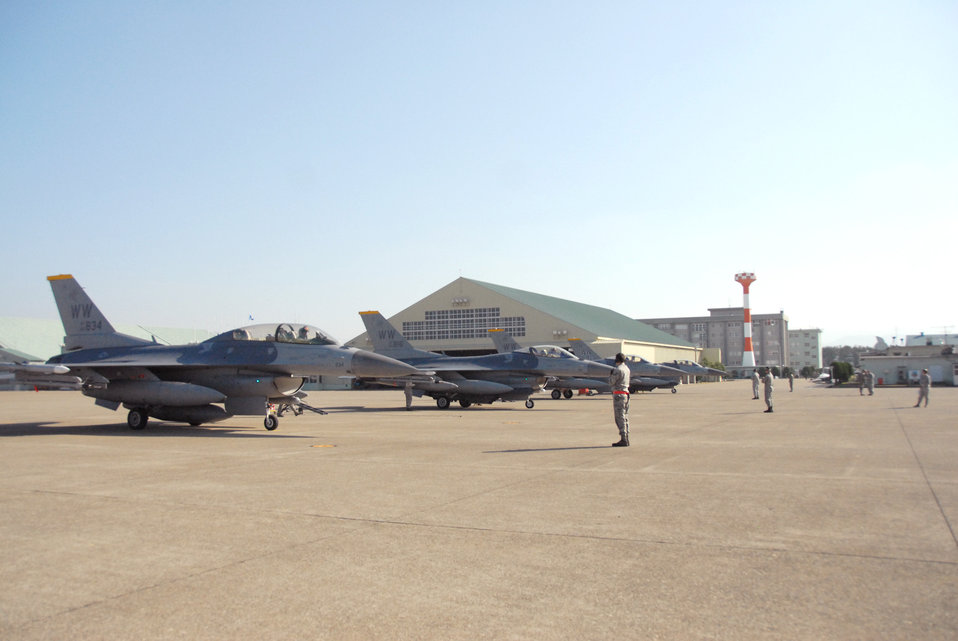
Keen Sword 11 fighter pilots

35th Maintenance Squadron Airmen marshal F-16 Flying Falcons from Misawa Air Base, Japan, on the runway Dec. 1, 2010, at Komatsu Air Base, Japan. Twelve F-16s and more than 160 Airmen from Misawa AB arrived in support of Exercise Keen Sword. The exercise includes more than 10,000 U.S. participants from the Army, Navy, Air Force and Marine Corps.